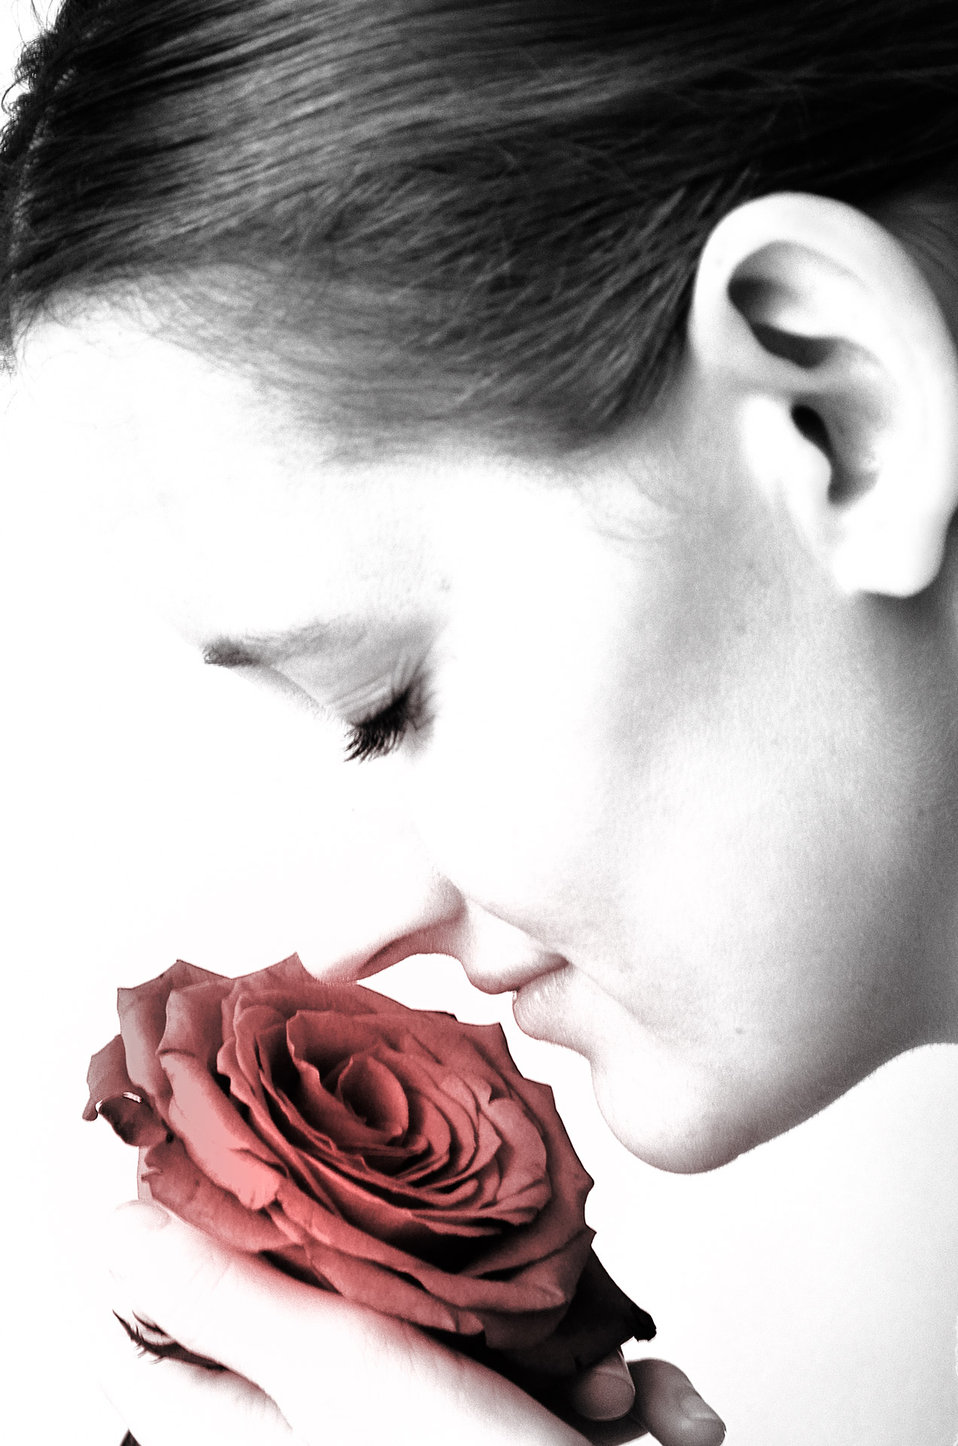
Woman and roses.